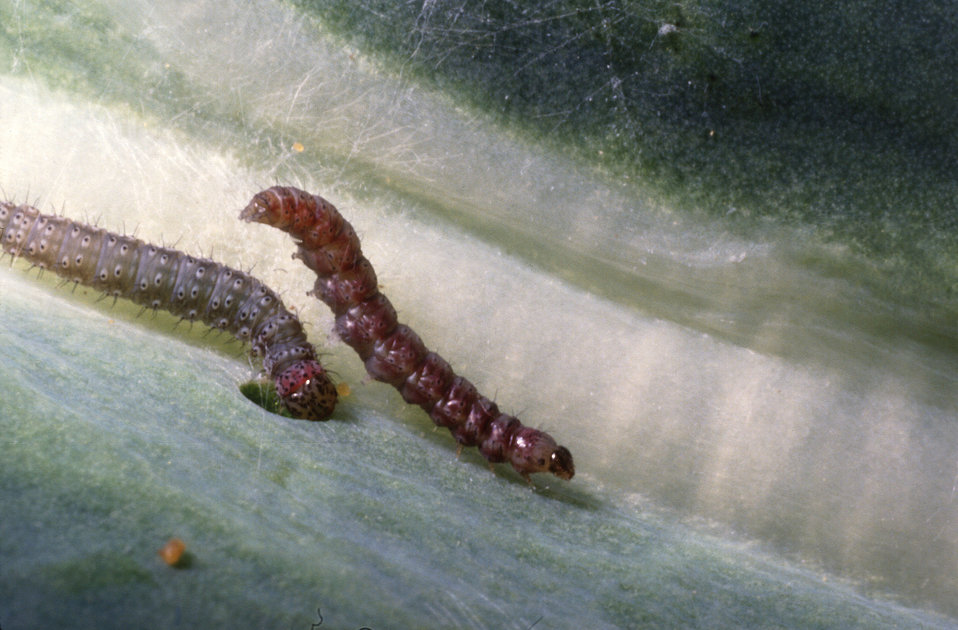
Diamondback moth larvae feed on a cabbage leaf.